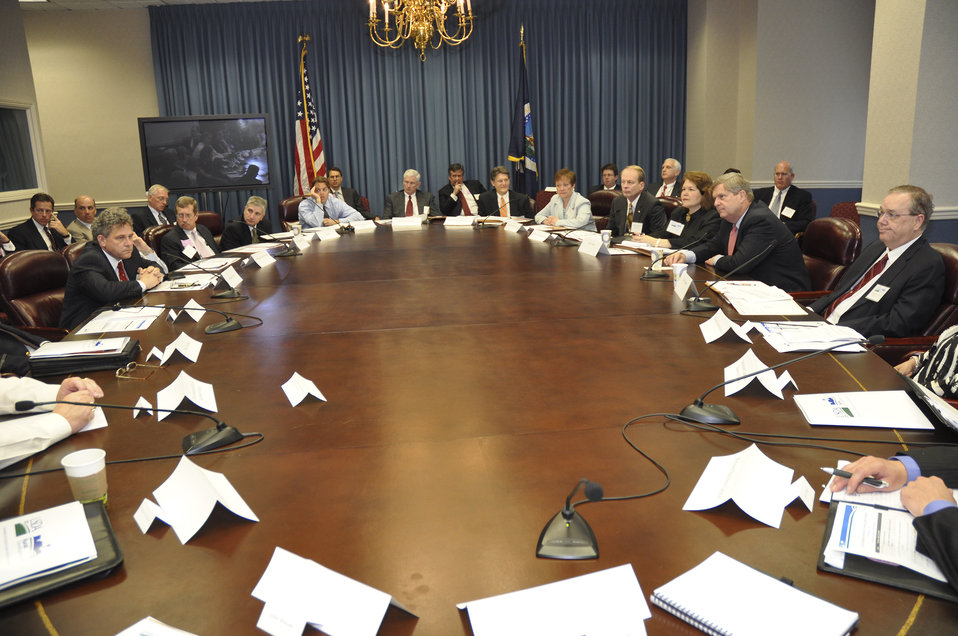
Agriculture Secretary Tom Vilsack makes remarks at the National Lenders Roundtable meeting held at the U.S. Department of Agriculture in Washington, D.C., on Wednesday, May 26, 2010. USDA Photo 10di1378-051.